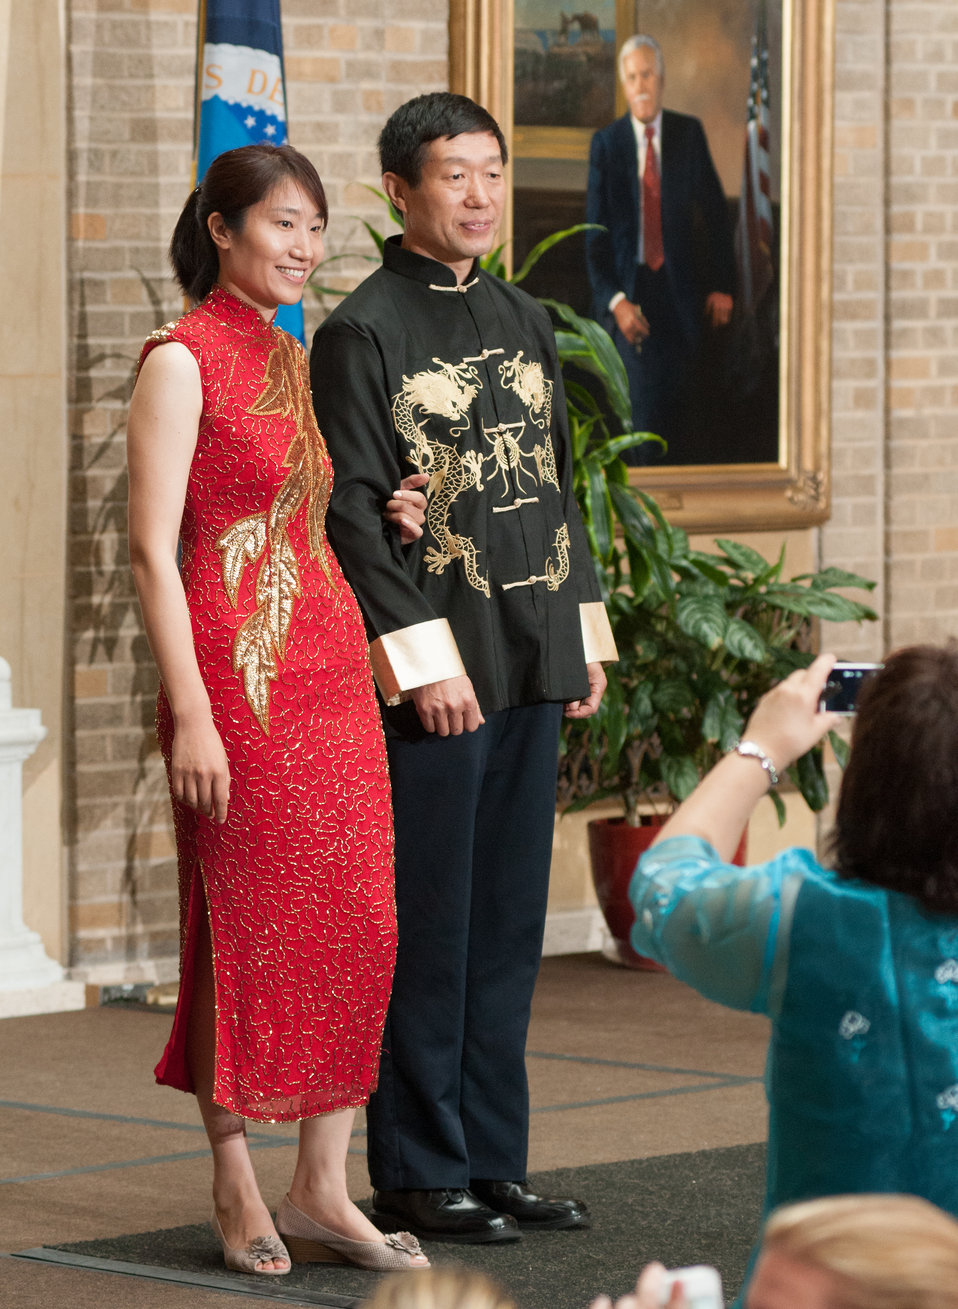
Traditional clothing from various Asian countries were demonstrated during this show of clothing, part of the U.S. Department of Agriculture (USDA) Asian Pacific American Heritage Month Observance program, at the USDA headquarters, Whitten Building patio, in Washington, D.C., on Thursday, May 23, 2013. This year’s theme is “Building leadership; Embracing the Cultural Values and Inclusions.”